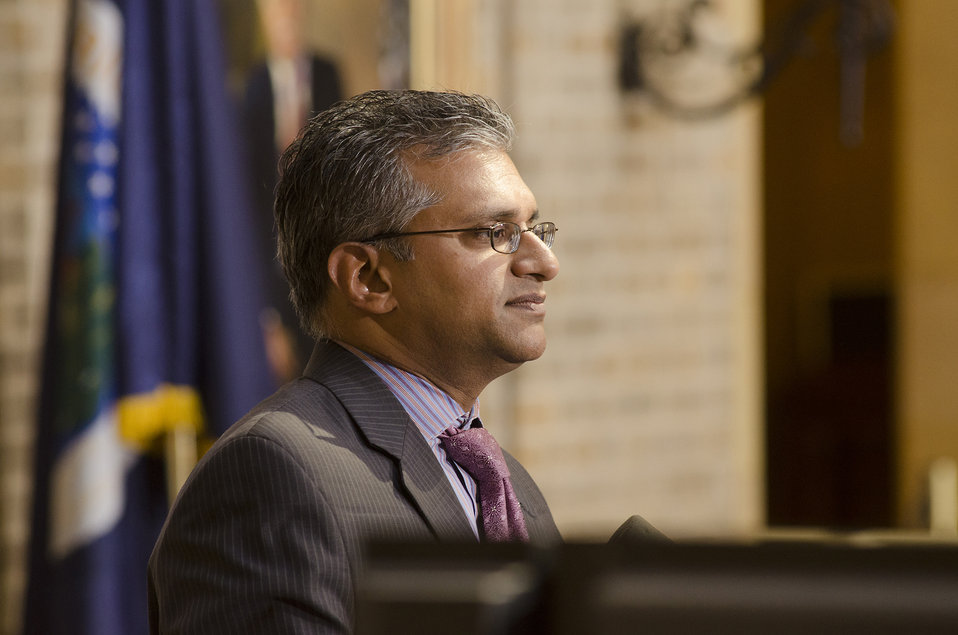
U.S. Department of Housing and Urban Development (HUD) Office of Sustainable Housing and Communities Acting Director Salin Geevarghese speaks at the closing session of the White House Rural Forum on Regional Innovation on the patio in the Whitten Building at USDA on Thursday, Sep. 19, 2013.